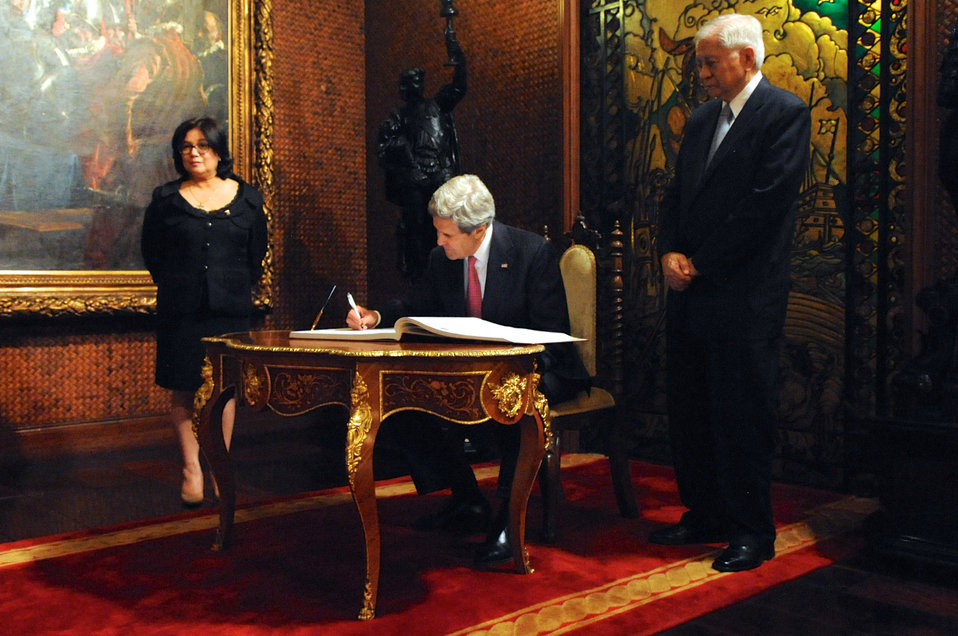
Secretary Kerry Signs the Guest Book at Malacanang Palace in Manila

U.S. Secretary of State John Kerry signs the guest book at Malacanang Palace in Manila after arriving for meetings and dinner with President Begnino Aquino of the Philippines on December 17, 2013.